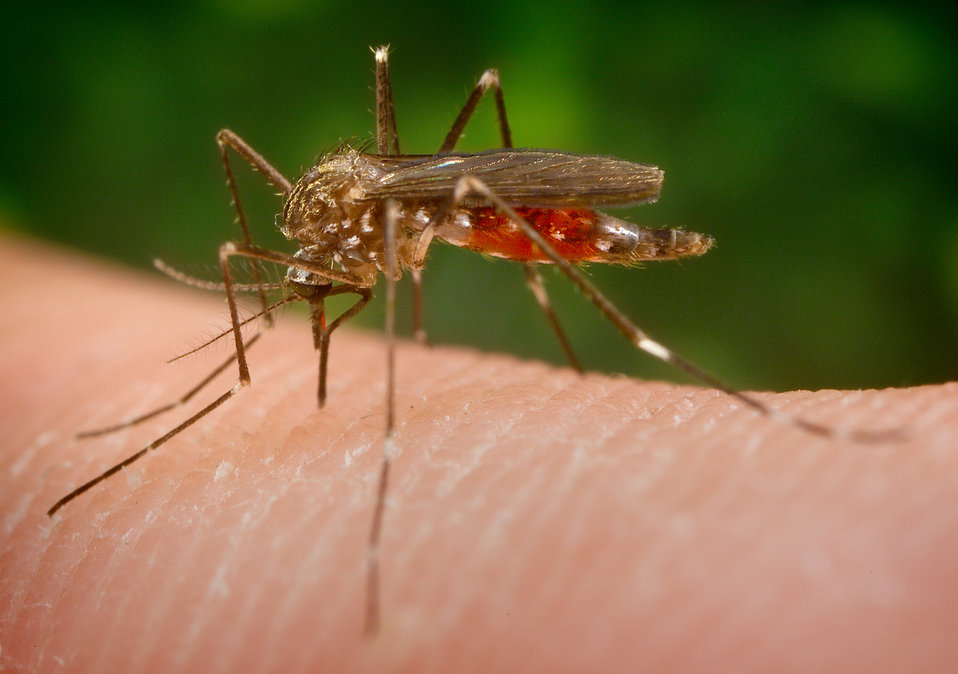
This mosquito, known as Aedes japonicus (also called Ochlerotatus japonicus), is a specimen of the Notre Dame colony. This Asian mosquito was first collected in the United States in New York and New Jersey in 1998.